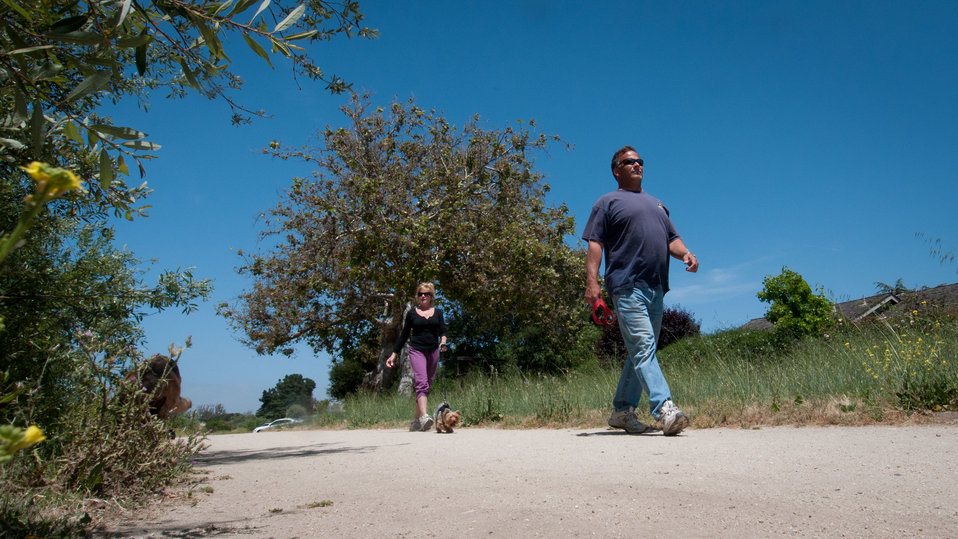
Mark and Leann Rossow walk their dogs along Toro Creek Road, Salinas, CA., on Thursday, June 16, 2011. On the right are Toro Creek and its riparian zone. This area between the creek bottom and the land along its banks that seasonal water flows is an ecosystem of trees, grass, and various deep-rooted plants. Plants such as Willow trees, bushes and grasses normally provide the organic stabilization of the soil. A functioning riparian zone supports a clean Monterey Bay by removing sediments and other contaminants; reducing the risk of flooding and associated damage; reducing stream channel and stream bank erosion; increasing available water and stream flow duration by holding water in stream banks and aquifers; supporting a diversity of plant and wildlife species; to name some of the benefits stated in references. This Bureau of Land Management property also allows ranchers to purchase permits allowing their sheep (totaling 1,000 to 2,000) to graze the hills of the 7,200-acre property. The reduction of excess grass reduces fuel for fires. The sheep manure also provides nutrients to help the soil remain healthy.